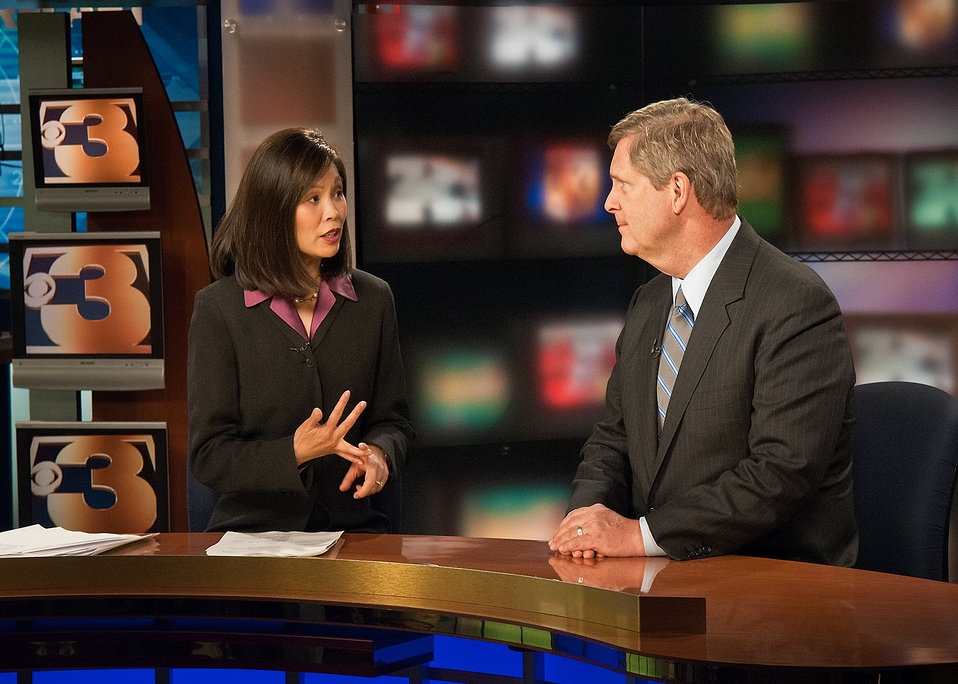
Michelle Wang (left) a news anchor with the CBS affiliate KMTV Channel 3 in Omaha, Nebraska interviews Agriculture Secretary Tom Vilsack (right) during a live broadcast after Secretary Vilsack held a town hall meeting at the Glenwood Community High School in Glenwood, Iowa on Thursday, June 16, 2011. Farmers, local and regional media listened and questioned Secretary Vilsack on the cause of the floodwaters along the Missouri River affecting Iowa and Nebraska. Secretary Vilsack offered advice and assistance available through the United States Department of Agriculture and other federal agencies.